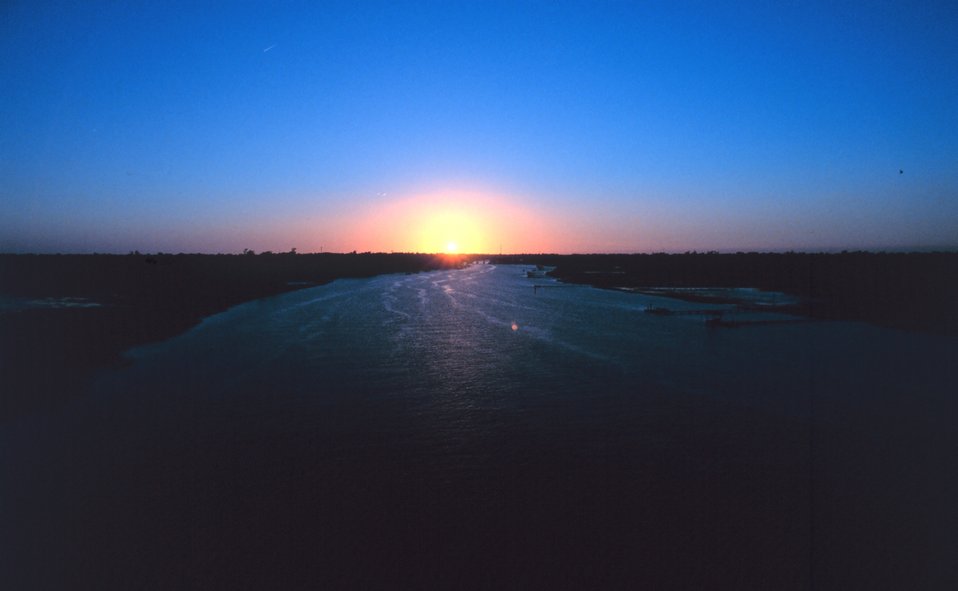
A sunset over coastal waters near Charleston.